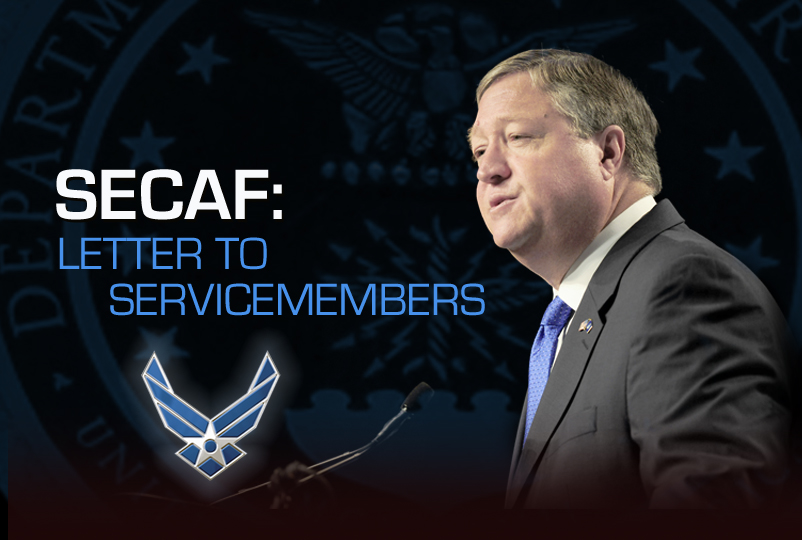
SECAF: Letter to Servicemembers